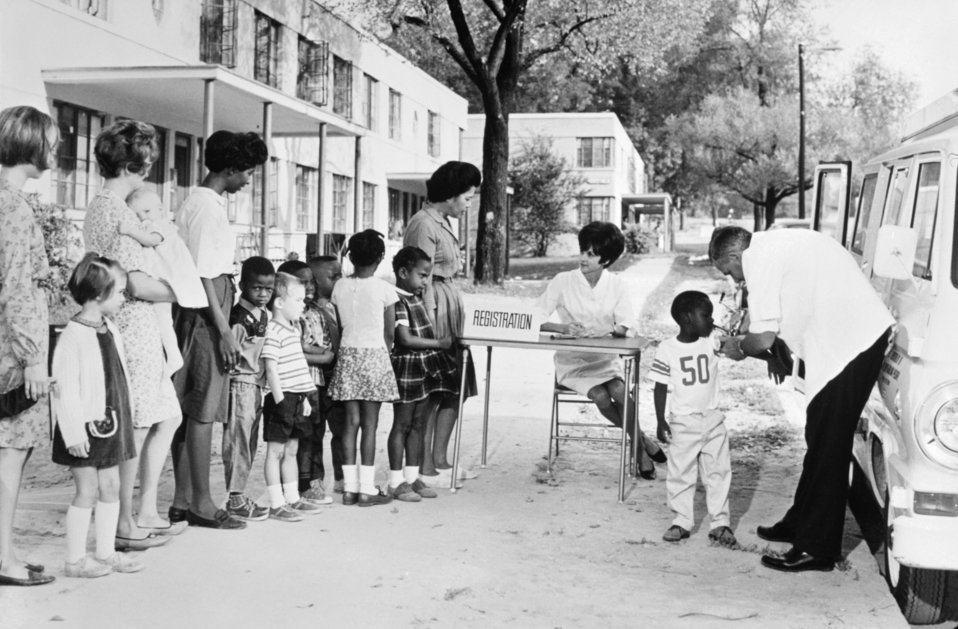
Group Immunization